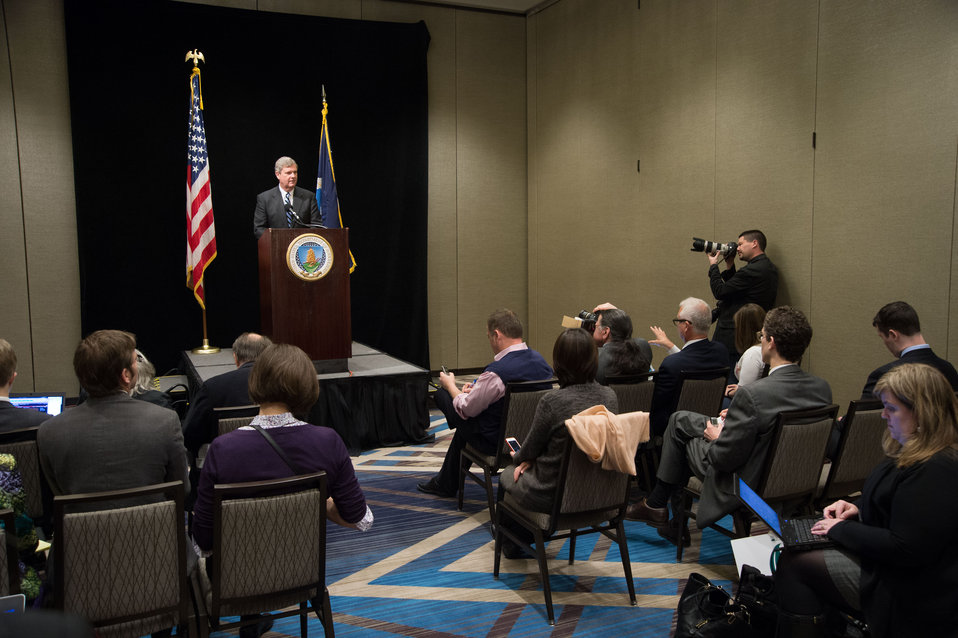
Agriculture Secretary Tom Vilsack makes remarks to the press at the 2014 Agricultural Outlook Forum on Thursday, Feb. 20, 2014 in Arlington, VA. The U.S. Department of Agriculture's (USDA) annual Agricultural Outlook Forum brings together the agricultural community to discuss policy, trade, science, rural development, and the economic outlook for the coming year. The Forum also focuses on forestry, health and nutrition issues, and the changing dynamics and face of rural America.